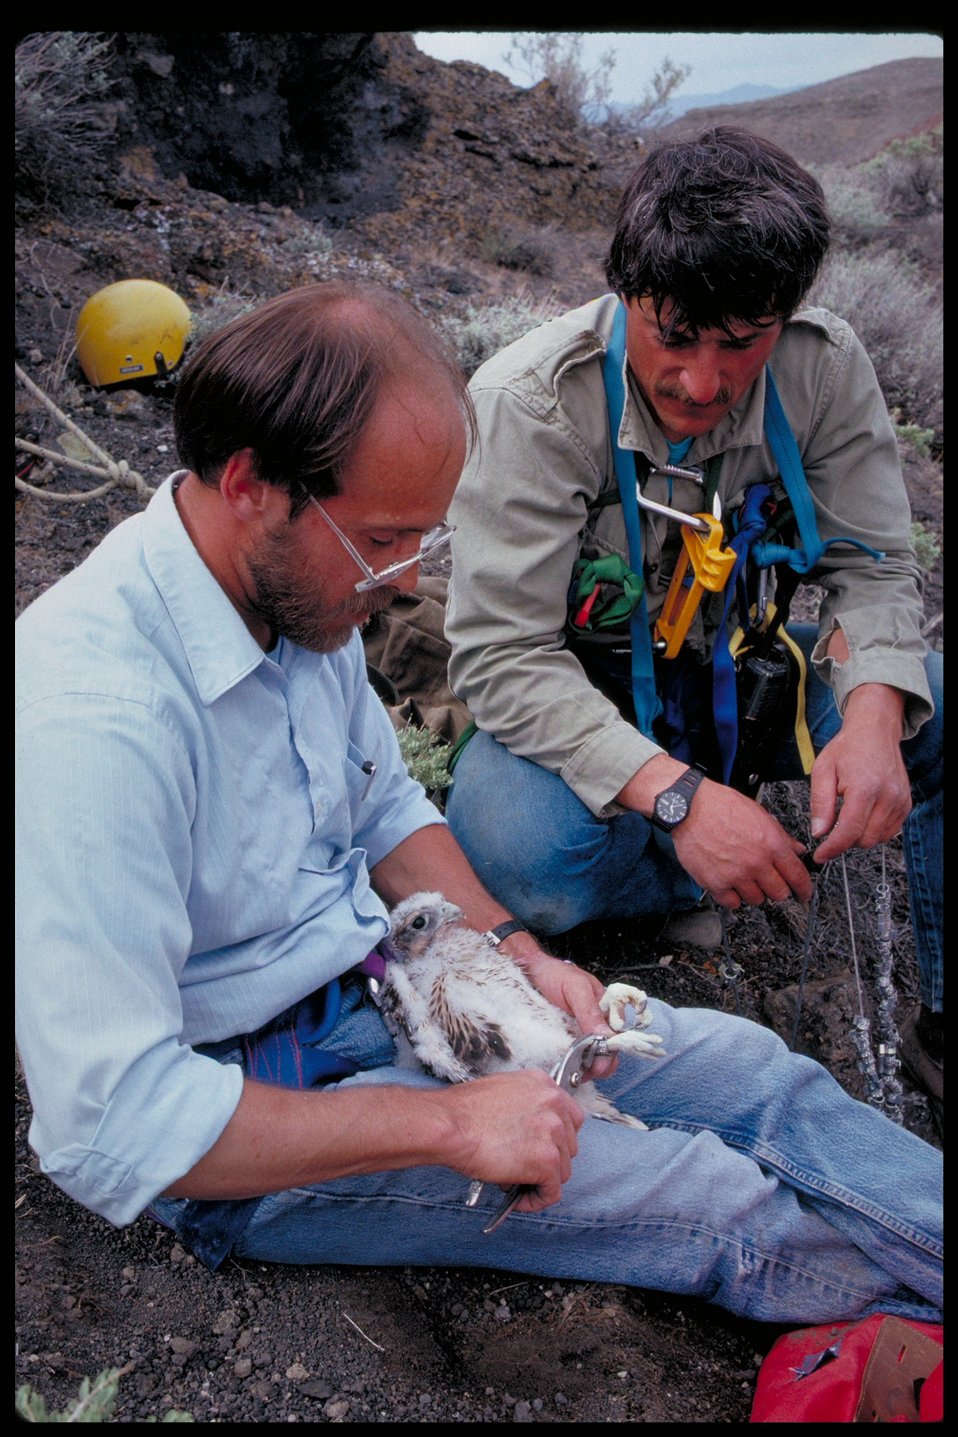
Banding Peregrine Falcon chicks Birds of Prey Research Birds of Prey National Conservation Area BOP Owyhee Field Office LSRD Lower Snake River District